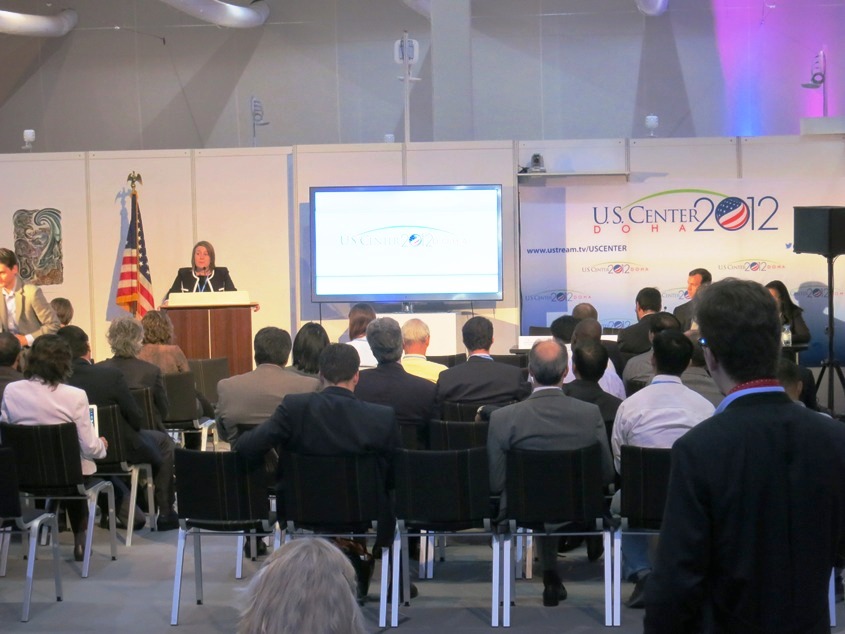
USAID's Batten Addresses the Audience

USAID Global Climate Change Coordinator Kit Batten addresses the audience at the U.S. Center at the 18th Session of the Conference of the Parties to the UN Framework Convention on Climate Change (COP-18) in Doha, Qatar, November 29, 2012.